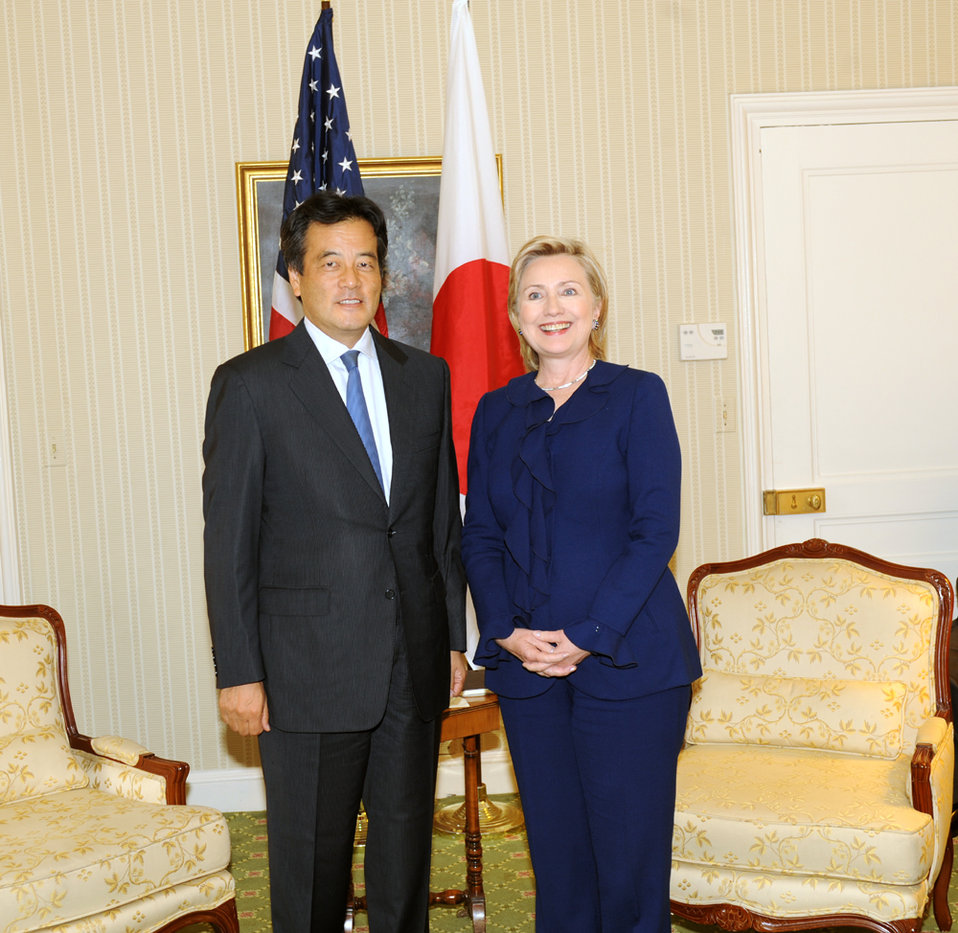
UNGA 2009: Secretary Clinton Meets With Japanese Foreign Minister

U.S. Secretary of State Hillary Rodham Clinton meets with Japanese Foreign Minister Katsuya Okada at the Waldorf Astoria hotel during the 64th Session of the UN General Assembly in New York City, New York September 21, 2009.